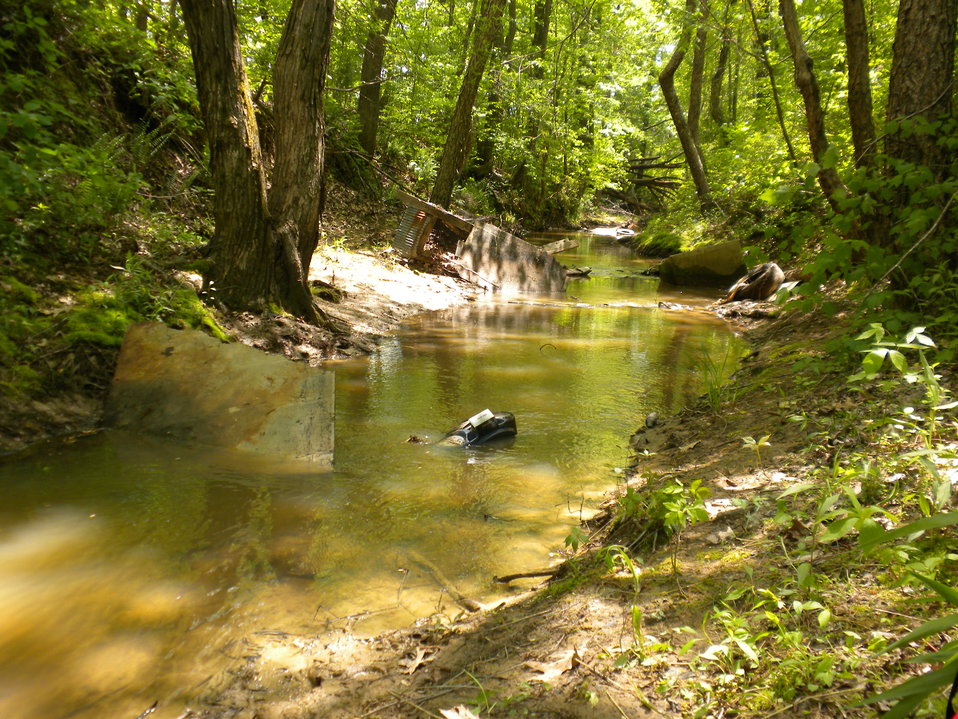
Crayfish1

In some streams, trash is the largest and most stable cover available to crayfish.